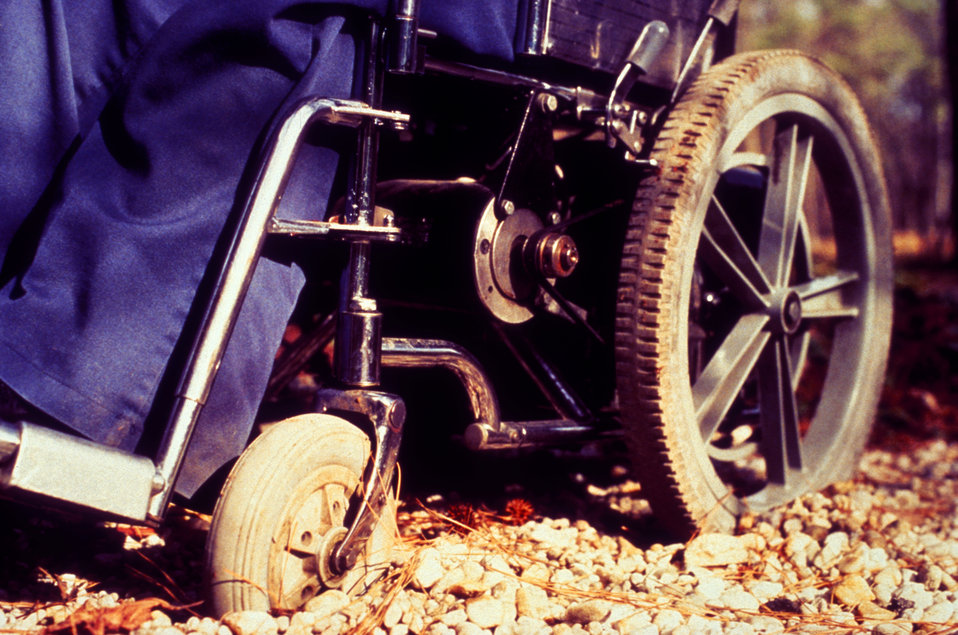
This 1994 image depicted a scenario common to wheelchair users, involving the difficulties in maneuverability of the chair's wheels encountered when traveling through various terrains. In this particular instance, the ground surface was composed of loose gravel, which reduced traction, and the wheel's ability to make forward progress. Being that this was a motorized wheelchair, it was much heavier than the non-motorized version, and was therefore, not only impossible for its user to extricate himself from the situation, but would have been most difficult, even for a strong assistant to accomplishing as well. When constructing pathways, all user groups must be taken into account, not only for those walking, but all types of mobility-challenged individuals, who'd be using wheelchairs, canes, and crutches, a philosophy implemented by the Center for Universal Design, (CUD).